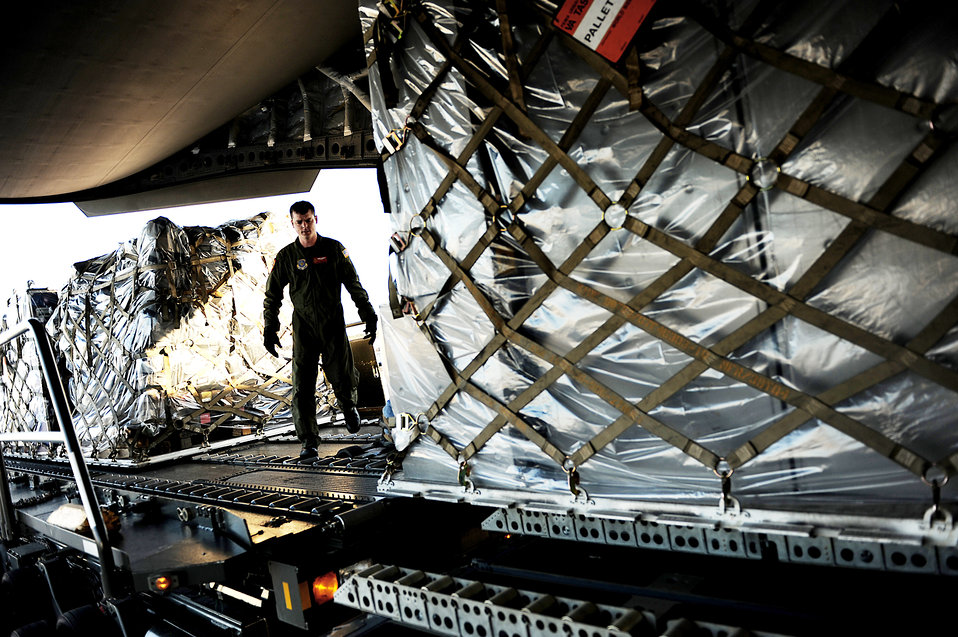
Haiti Earthquake Relief

Loadmaster Staff Sgt. Benjamin Cato from the 21st Airlift Squadron at Travis Air Force Base, Calif., checks the pallet load on a C-17 Globemaster III heading for Haiti earthquake relief Jan. 15, 2010, at Norfolk, Va.